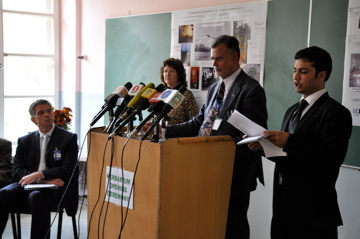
پوهنتون کابل لابراتوار نباتی را جهت حفظ میراث های نباتات افغانستان دوباره افتتاح نمود